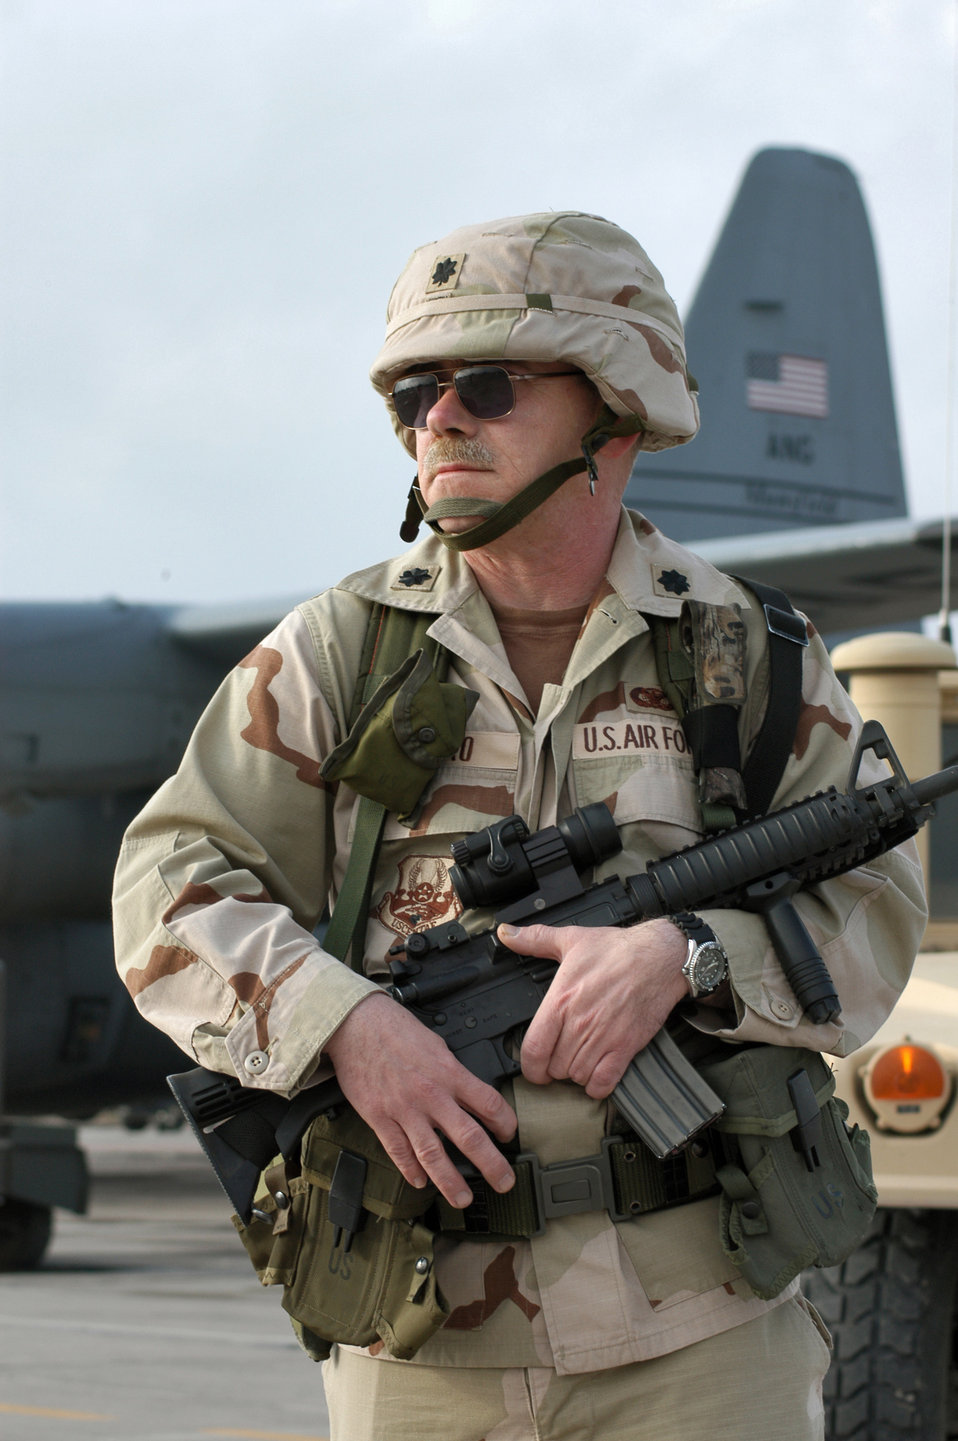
Airman's role brings career full circle

KARSHI-KHANABAD AIR BASE, Uzbekistan -- Lt. Col. Donald Klinko joined the Air Force in 1972 as a security police officer and was assigned to Malmstrom Air Force Base, Mont. More than 30 years later, the colonel, now a reservist, has maintained his proficiency in the career field and has twice joined security forces fly-away teams to forward-deployed locations in Afghanistan for Operation Enduring Freedom. Colonel Klinko is the 416th Expeditionary Mission Support Squadron commander here.